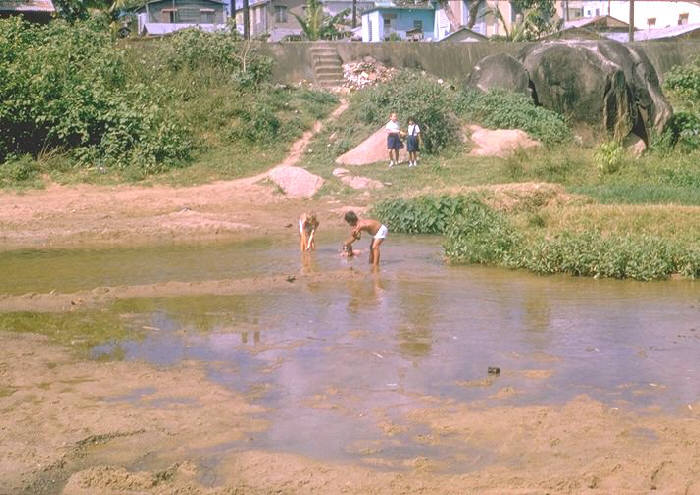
Puerto Rican boys in water which could contain the agent of bilharzia (schistosomiasis)